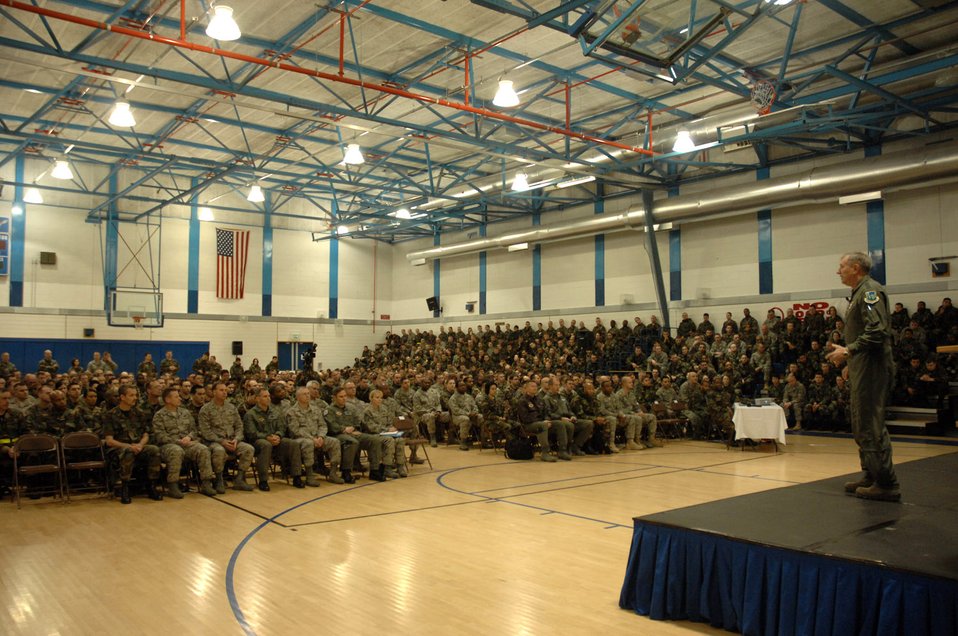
New USAFE commander explains road ahead

Gen. Roger A. Brady speaks to Airmen Feb. 1 at Royal Air Force Lakenheath, England. During his first visit to England as the U.S. Air Forces in Europe commander, General Brady gave Airmen a thumbnail view of how USAFE and RAF Lakenheath fit into the Air Force mission.